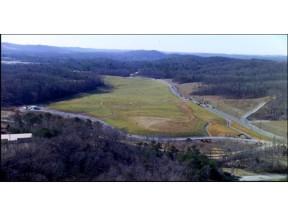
Melton Valley Site

An aerial photo of Melton Valley after site cleanup operations were completed on September 30, 2006.